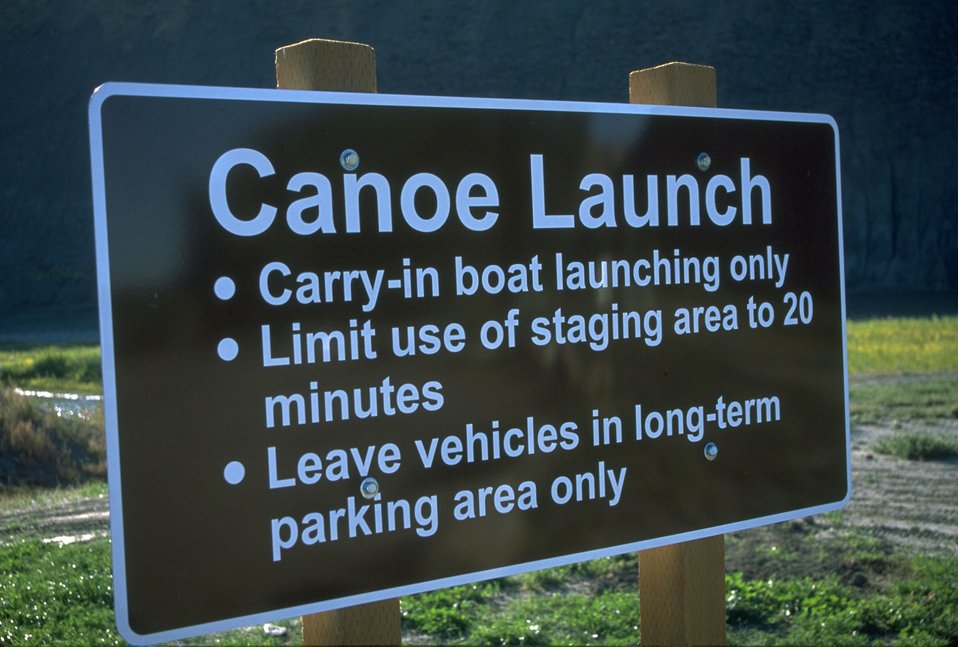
Sign at canoe launching area at Fort Benton Fairgrounds